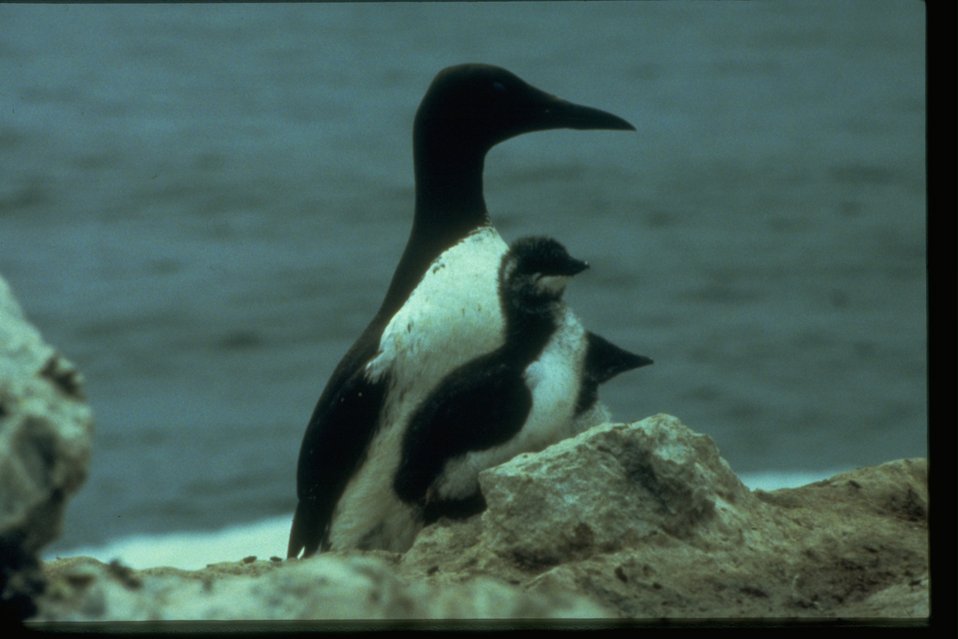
Common Murre with chicks along the coast.